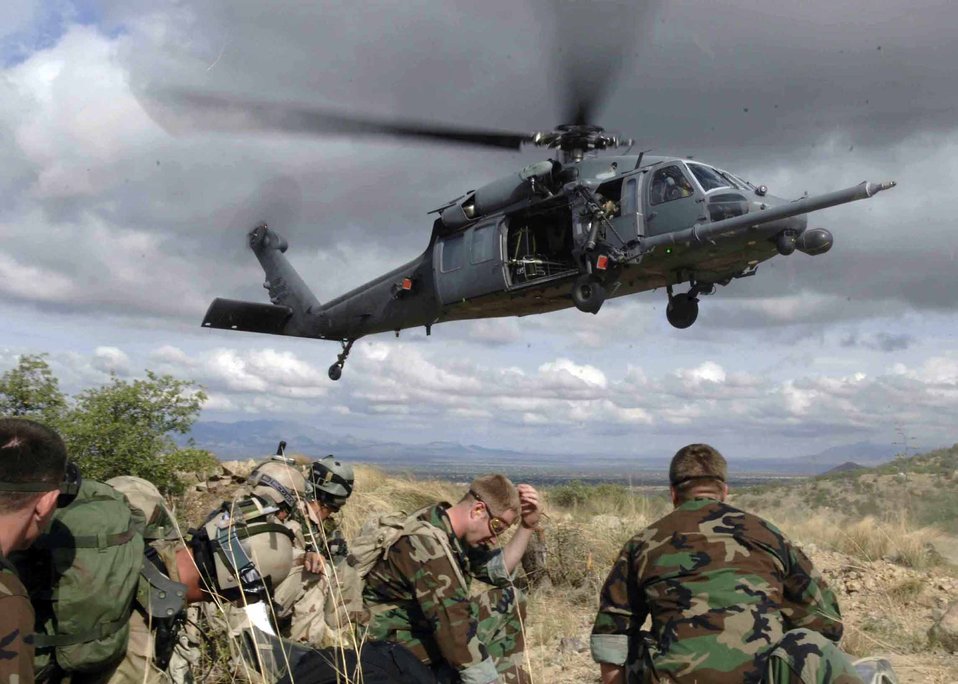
Angel Thunder 2010 kicks off

Pararescuemen and simulated mass casualty survivors take cover as a HH-60G Pavehawk lands July 27, 2006, as part of Exercise Angel Thunder. The survivors were flown to Davis-Monthan Air Force Base, Ariz., to a simulated level 2/3 medical facility. Angel Thunder 2010 kicked off April 13, 2010.